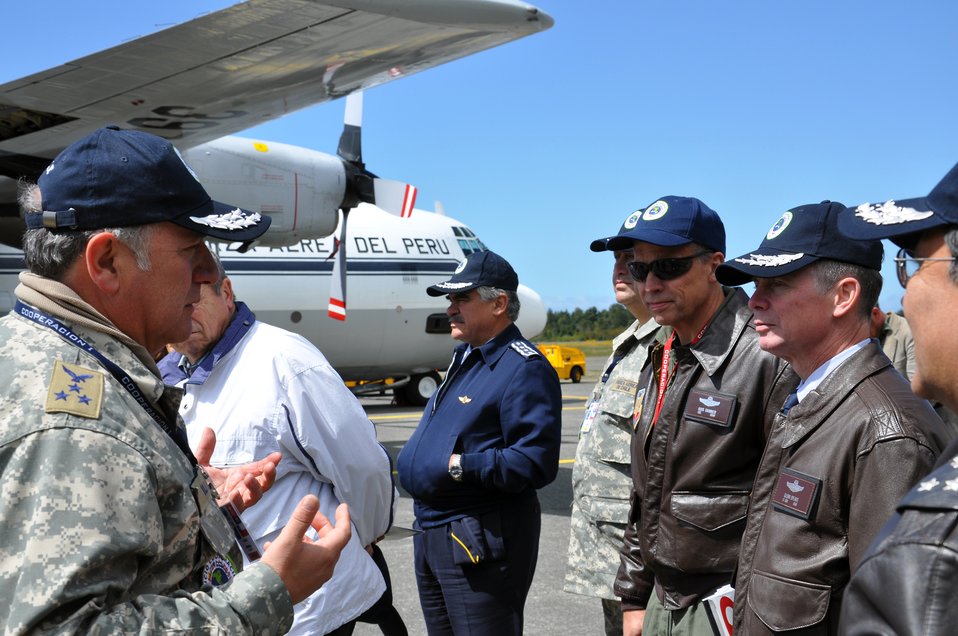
Co 1 PB

The Cooperacion 1 exercise director, Aviation General (two-star general) Luis Ili Delgado gives Lt. Gen. Glenn F. Spears, Lt. Col. Kris Skinner and other air force leadership of the Americas a tour of the exercise headquarters. The VIP event was part of a SICOFAA exercise, (Sistema de cooperacion de las Fuerzas Aerias de las Americas) Cooperation 1 headquartered in Puerto Montt, Chile, Oct. 4 to 14. The exercise scenario involved using the air forces of SICOFAA member nations for humanitarian assistance after a natural disaster. General Spears is the 12th Air Force commander. Colonel Skinner is the secretary general of SICOFAA.